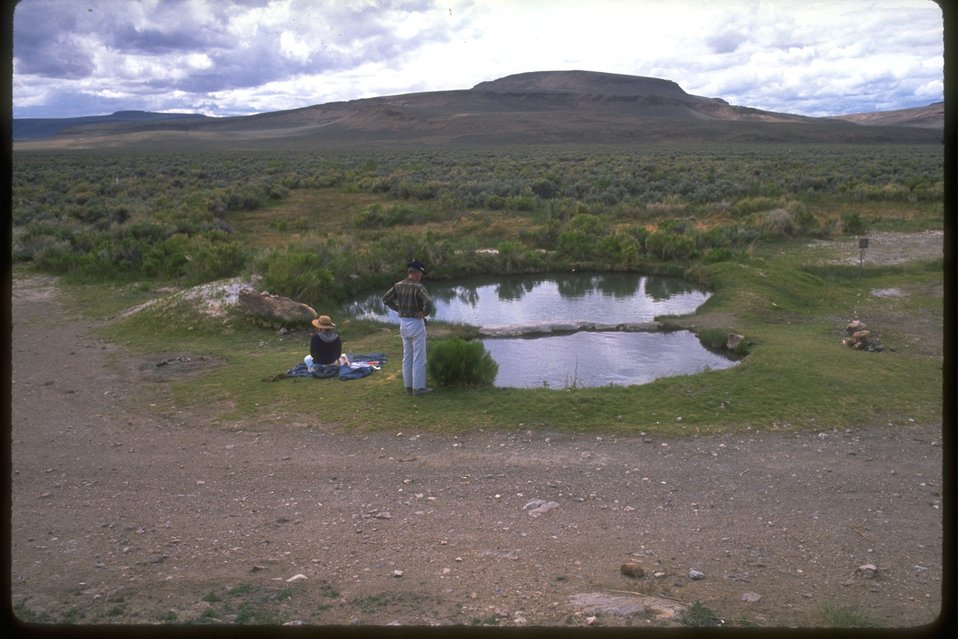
Small pond at Willow Creek Hot Springs.